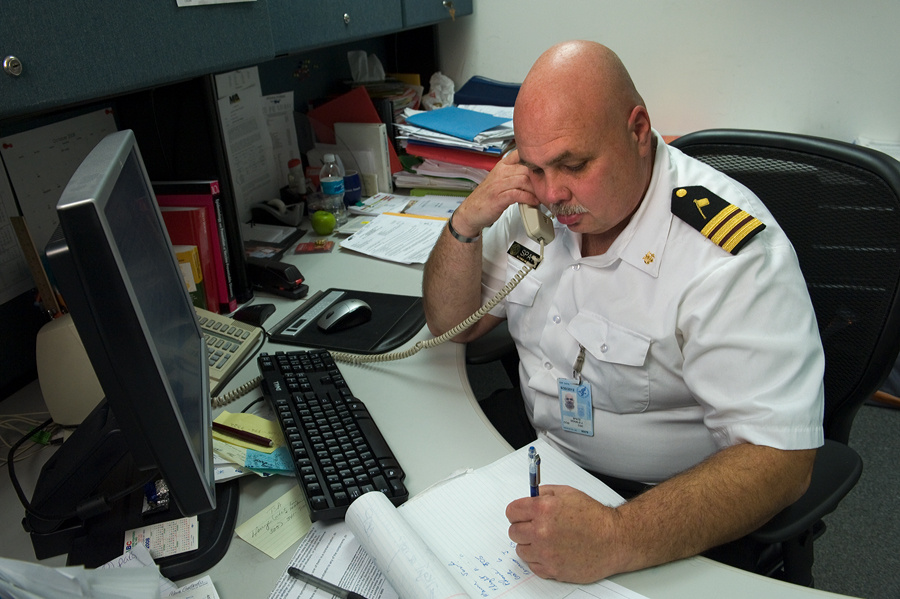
This image was captured during an October 2008 Preparedness Exercise involving a number of Federal and local agencies, including the Centers for Disease Control and Prevention (CDC).